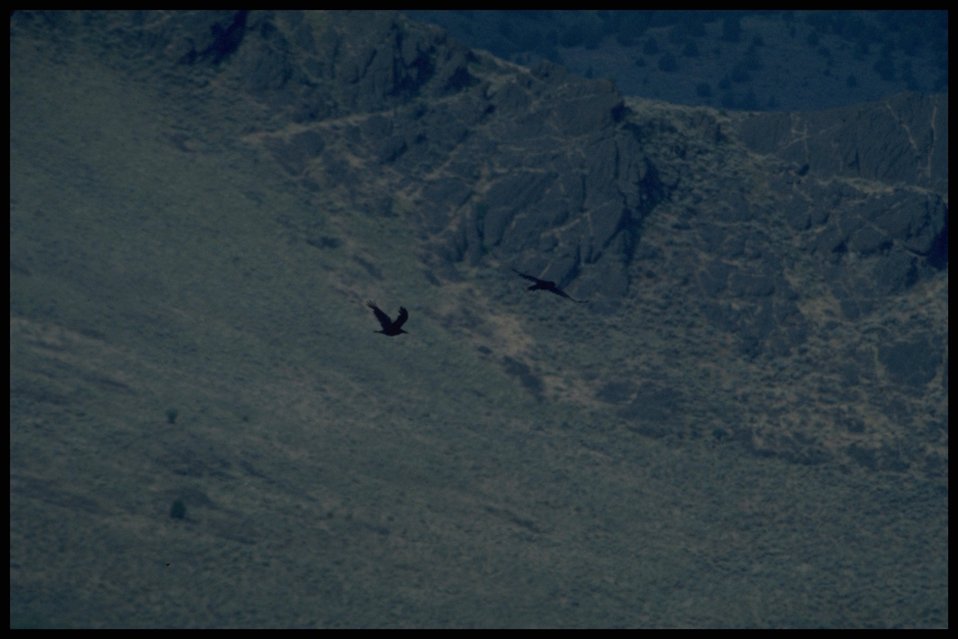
Far shot of Raven in flight, Lakeview District.